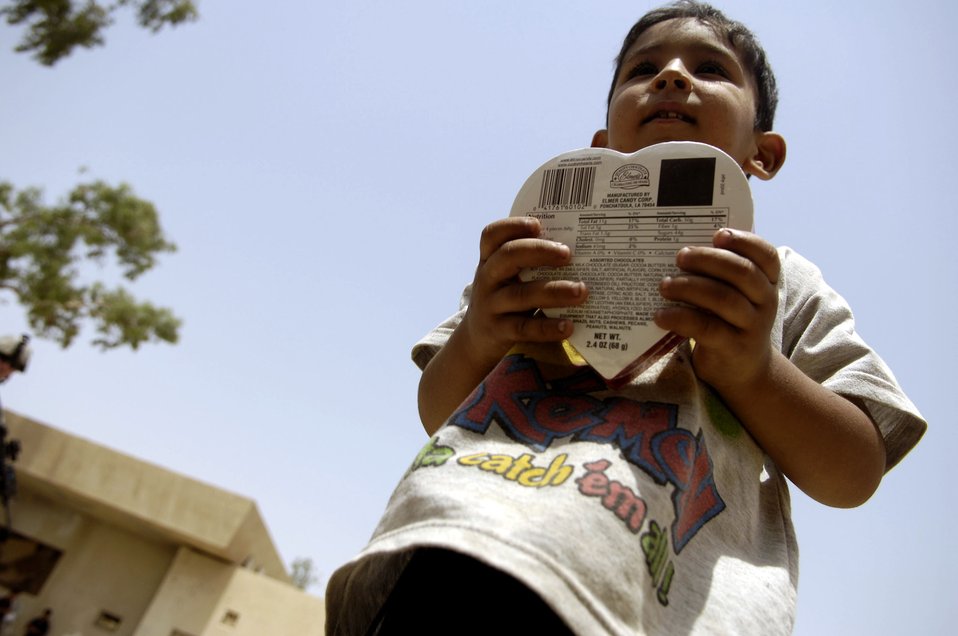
Gifts for the tender hearts

An Iraqi child clutches a box of chocolates he received as a gift May 24 from the Iraqi National Police in Al Furat, Iraq. During a humanitarian mission, U.S. servicemembers worked with the Iraqi police to distribute school supplies, toys and treats to Iraqi children.